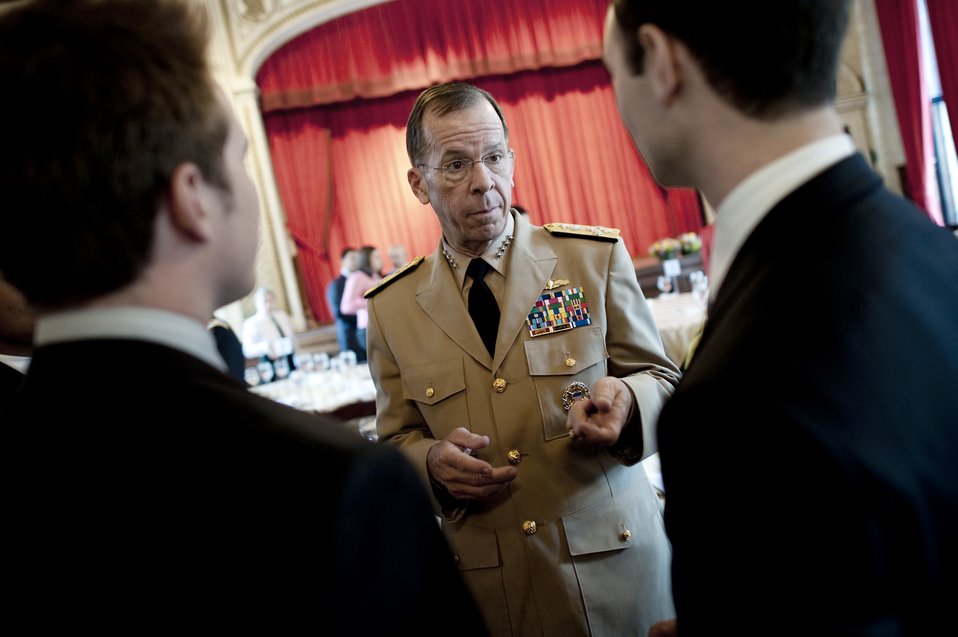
CJCS support for veterans

Adm. Mike Mullen, chairman of the Joint Chiefs of Staff, chats with military veteran students from Columbia University in New York City on April, 18, 2010. Admiral Mullen was participating in the Columbia University World Leaders Forum.